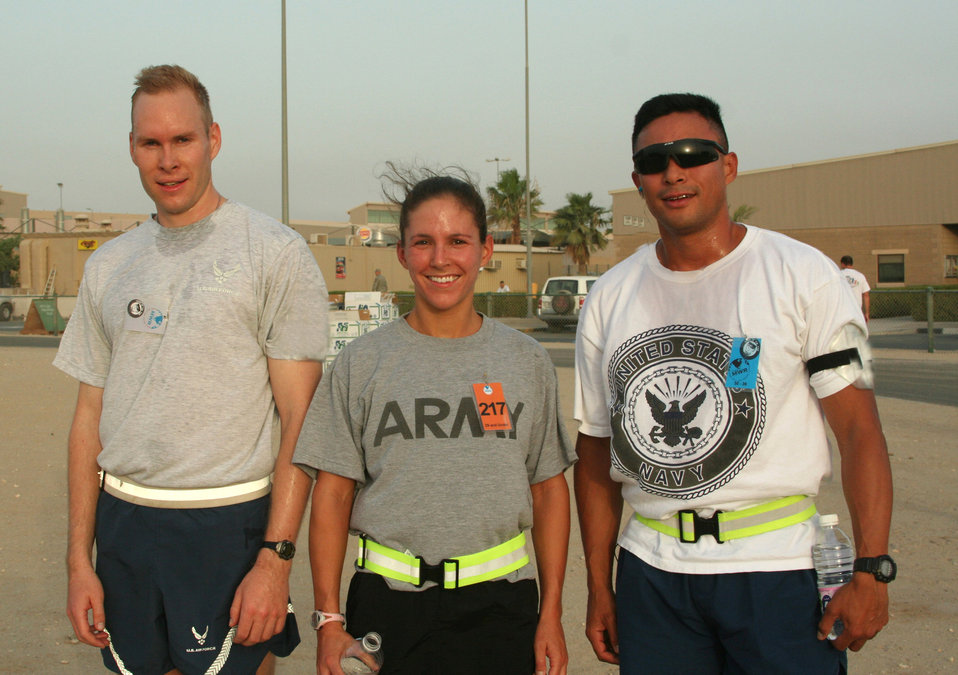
Runner celebrates Air Force birthday

Dan Pearson (left) finished third overall in the Air Force 5K birthday fun run Sept. 18 at Camp Arifjan, Kuwait. His time was 19 minutes and 4 seconds. Emily Potter of the Army came in first place at 18:07 Eric Szabo of the Navy finished second running the race in 18:52.